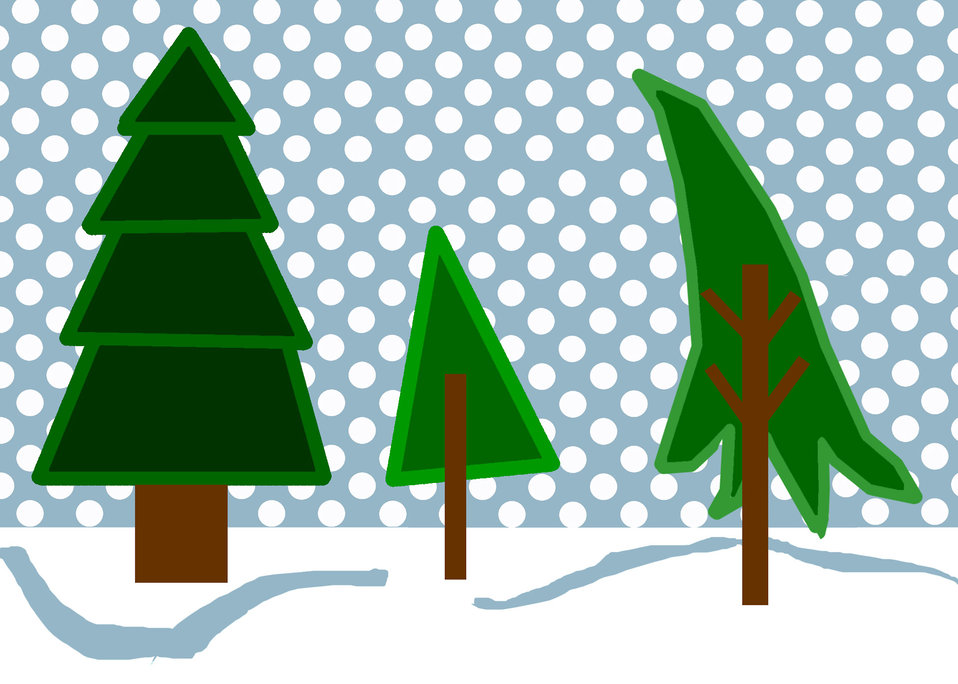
Winter woods snow scene.